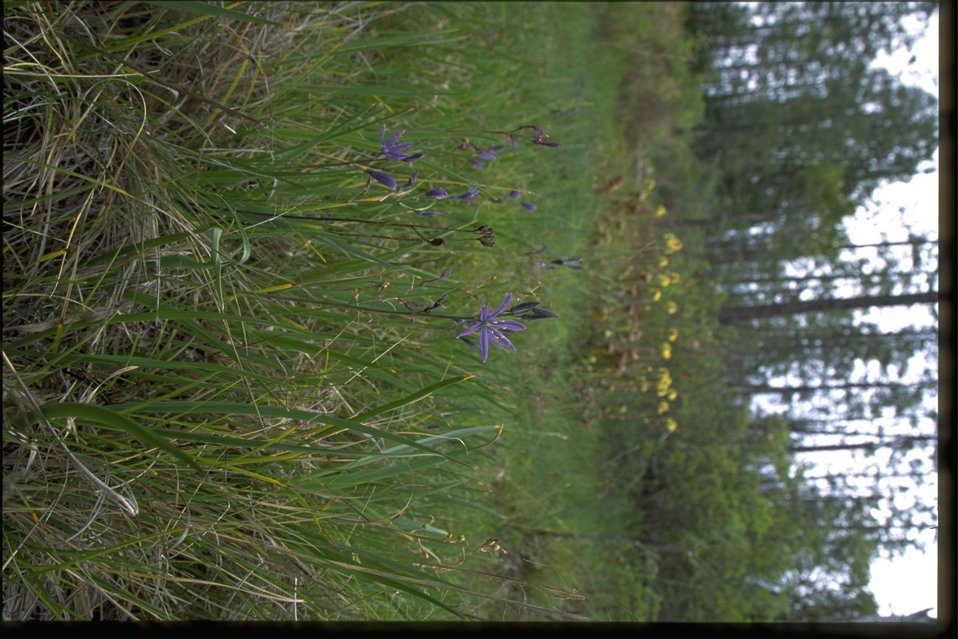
Farshot of Cobra Lily, Darlingtonia californica.